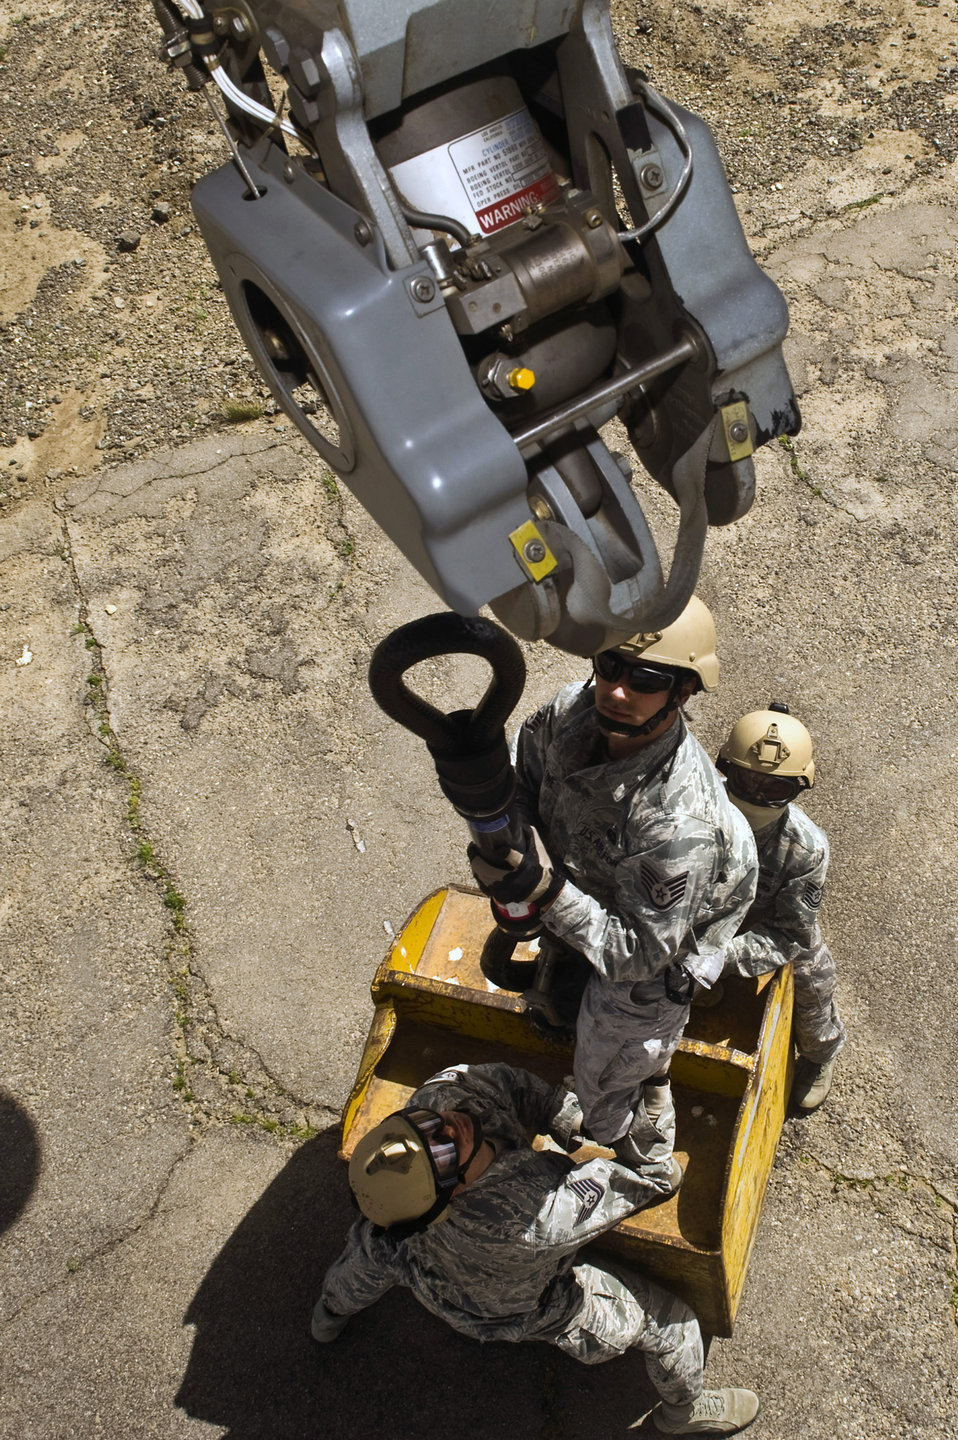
Airdrop and sling-load training

Staff Sgt. Jeremy Lowe attaches an 11,000-lb steel training block to a Nevada Army National Guard CH-47 Chinook helicopter while Tech. Sgt. Joshua Tully and Tech. Sgt. Joshua Ramos provide safety observation June 28, 2011, during airdrop and sling-load training at the Senator Harry Reid Readiness and Training Center near Stead, Nev. Lowe is an airborne vehicle equipment maintenance craftsman. Tully is an airborne fire protection craftsman. Ramos is an airborne electrical systems craftsman. All three NCOs are assigned to the 820th RED HORSE Airborne squadron.